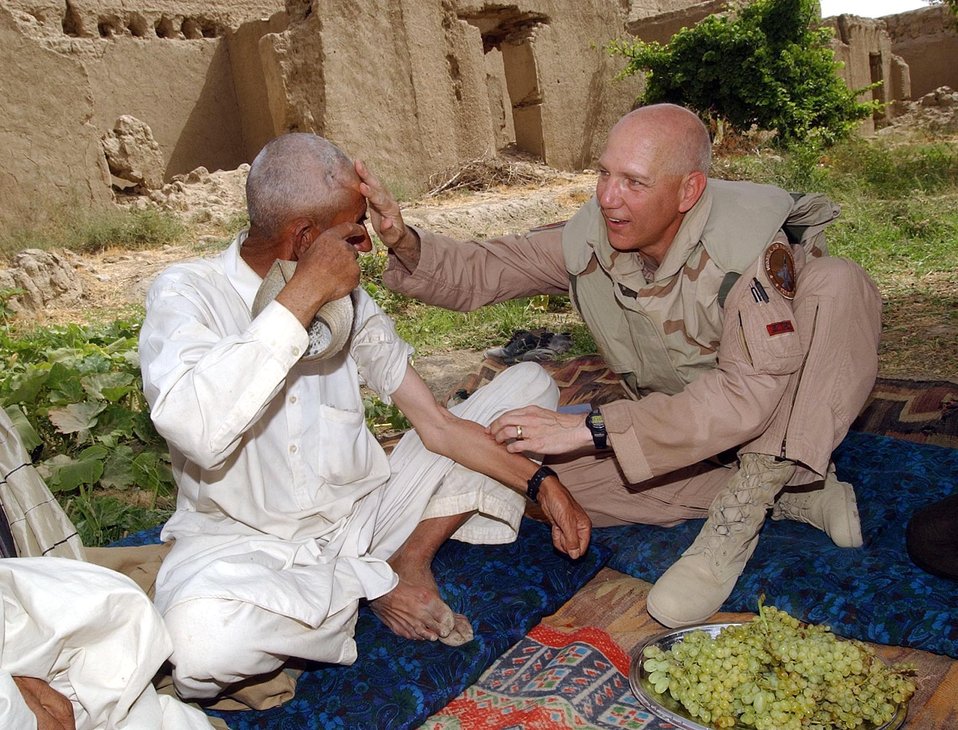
War scars

JAMADAAR, Afghanistan -- Ghulanhaider (left), an elder here, shows his scars from fighting with the Taliban to Col. Bill Busby, 455th Expeditionary Operations Group commander. Ghulanhaider fought the Taliban and other terrorist groups before coalition forces arrived. He has received multiple injuries from mortar fire and bullets.